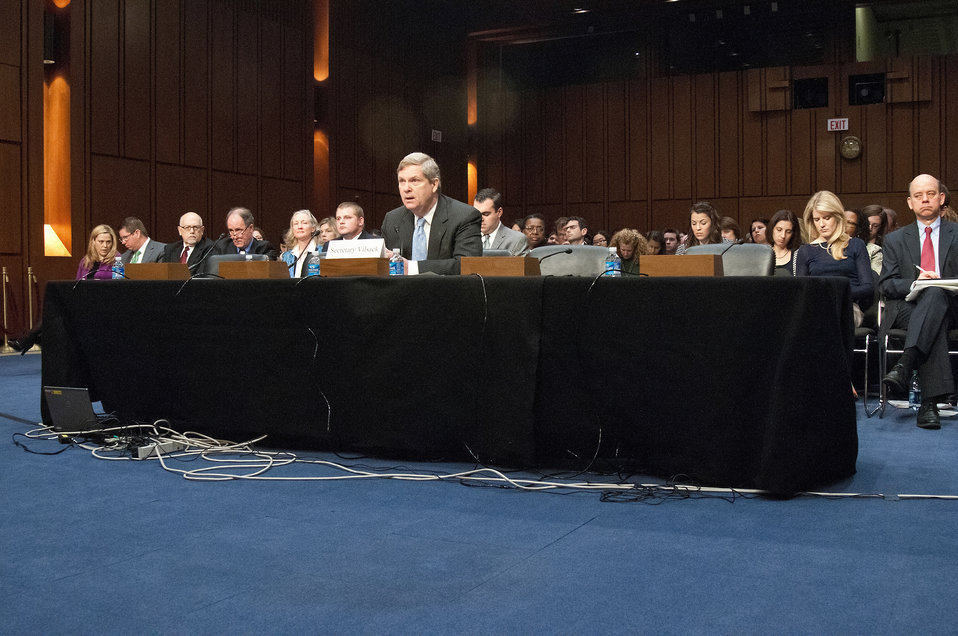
Agriculture Secretary Tom Vilsack testified on “Healthy Food Initiatives, Local Production and Nutrition” before the Senate Agriculture Committee on Wednesday, March 7, 2012 in Washington, D.C.